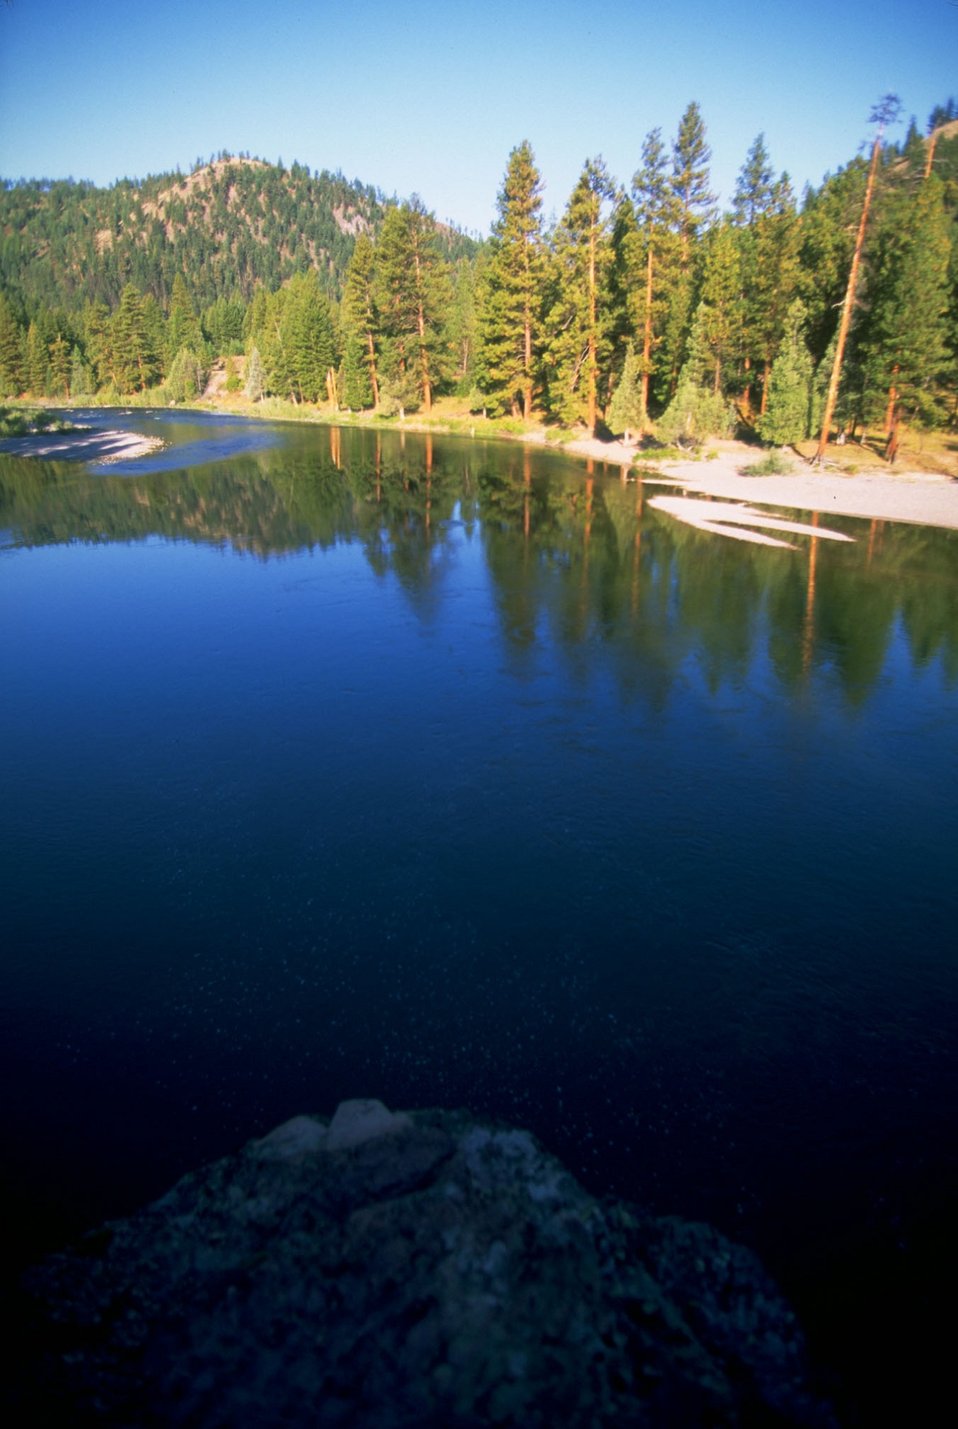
Red Rocks day use area viewed from Red Rocks cliffs VERTICAL